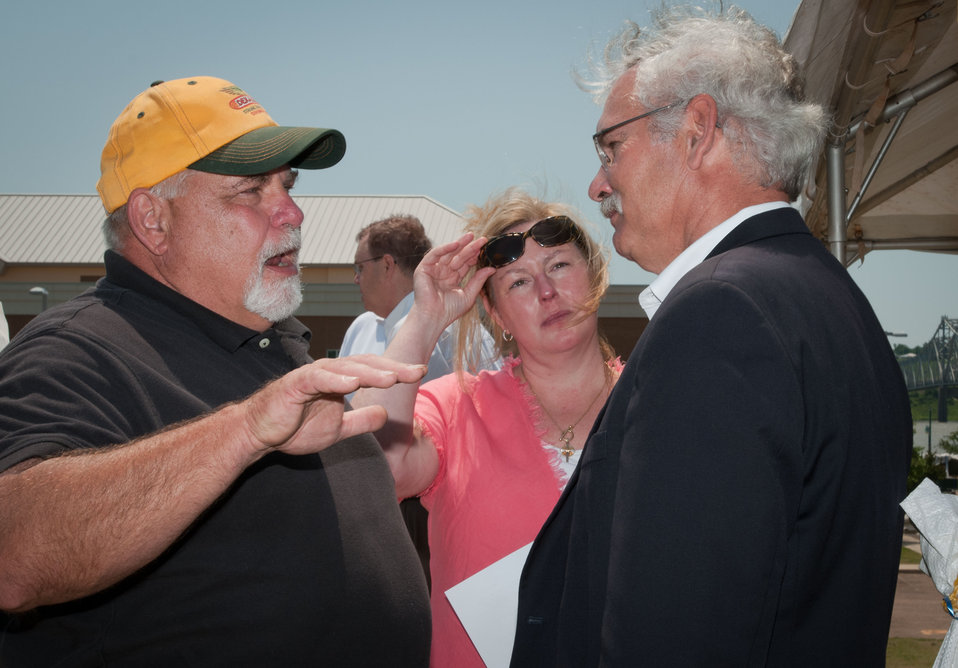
U.S. Department of Agriculture Acting Under Secretary Farm and Foreign Agriculture Service Michael Scuse speaks with following an outreach event on the Mississippi River levee at Vidalia, LA, on Thursday, May 19, 2011.